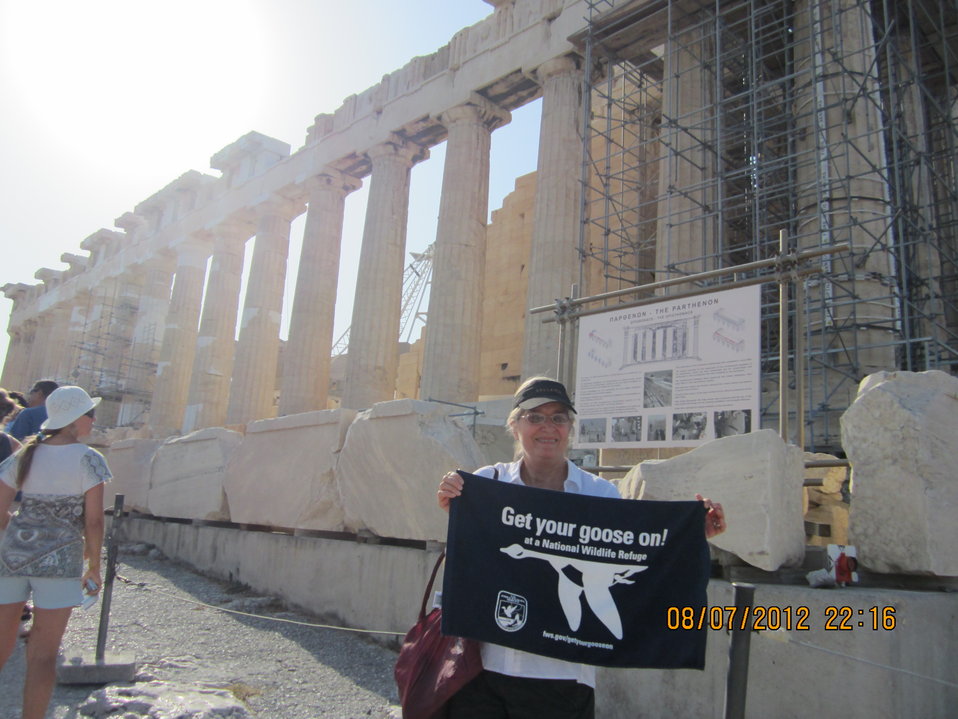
Get Your Goose On! - Parthenon Style!